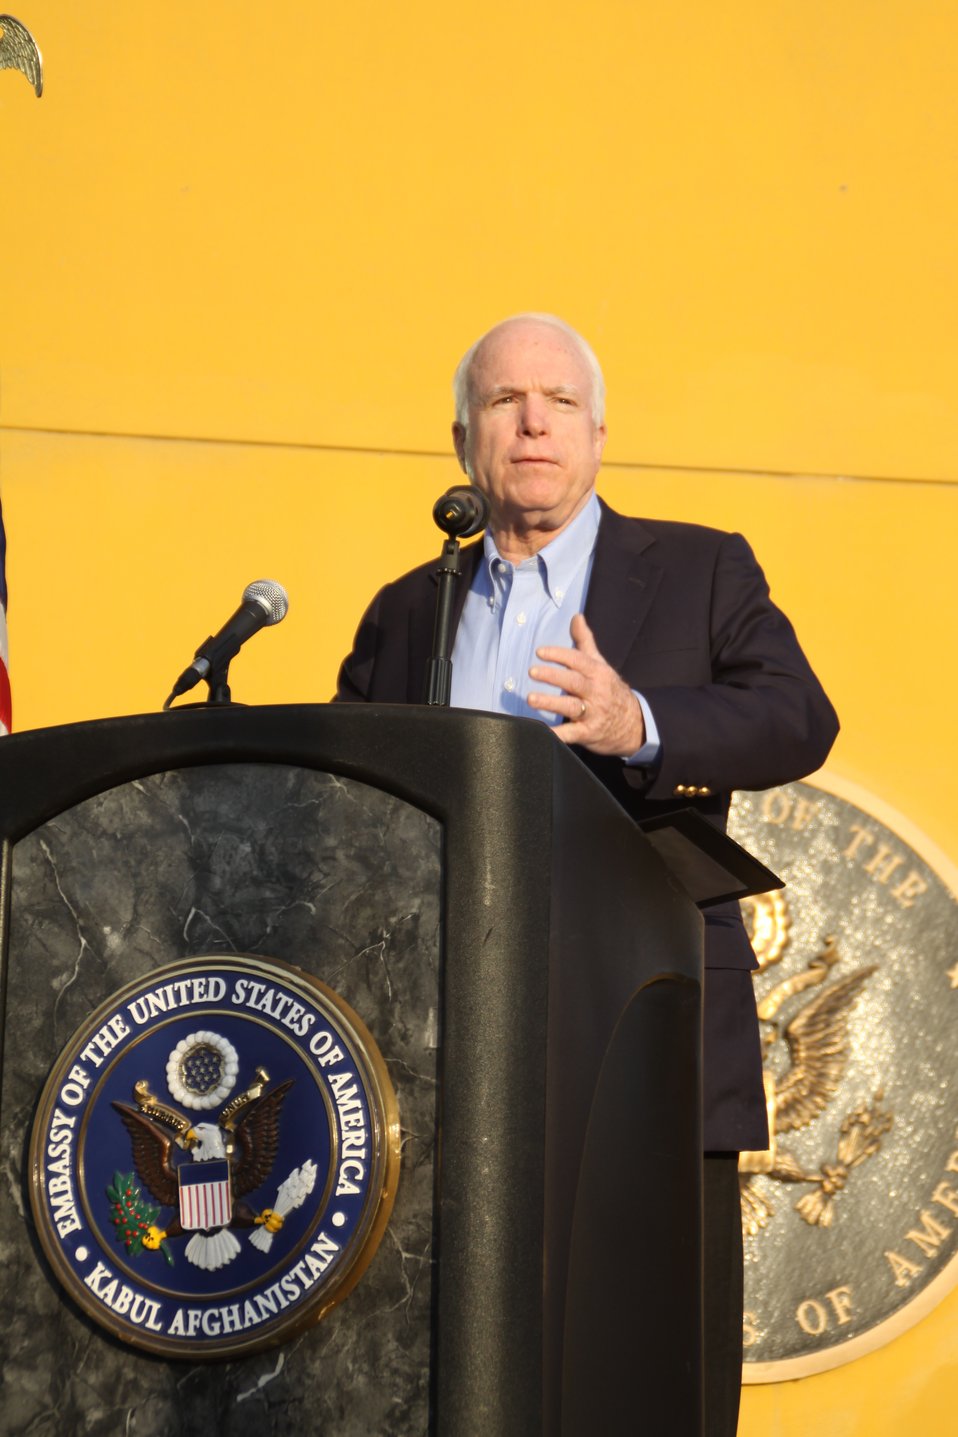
Senator McCain